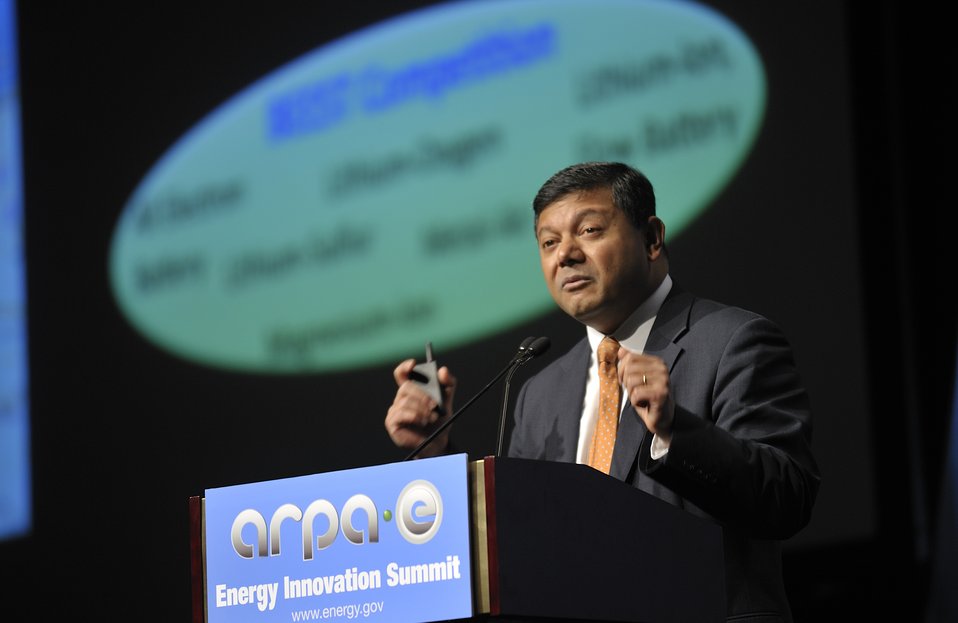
ARPA-E Energy Innovation Summit 2011, 26 of 83

Dr. Arun Majumdar, Director, ARPA-E.